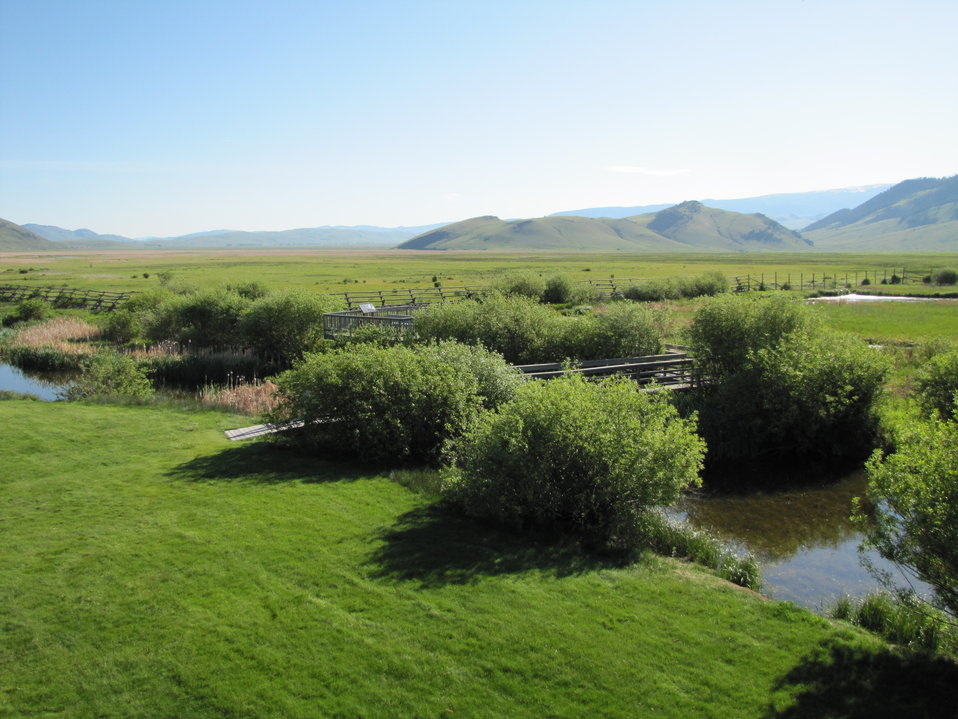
View from the Top

The view from the Visitor Center upper viewing deck takes in portions of the National Elk Refuge's southern end.